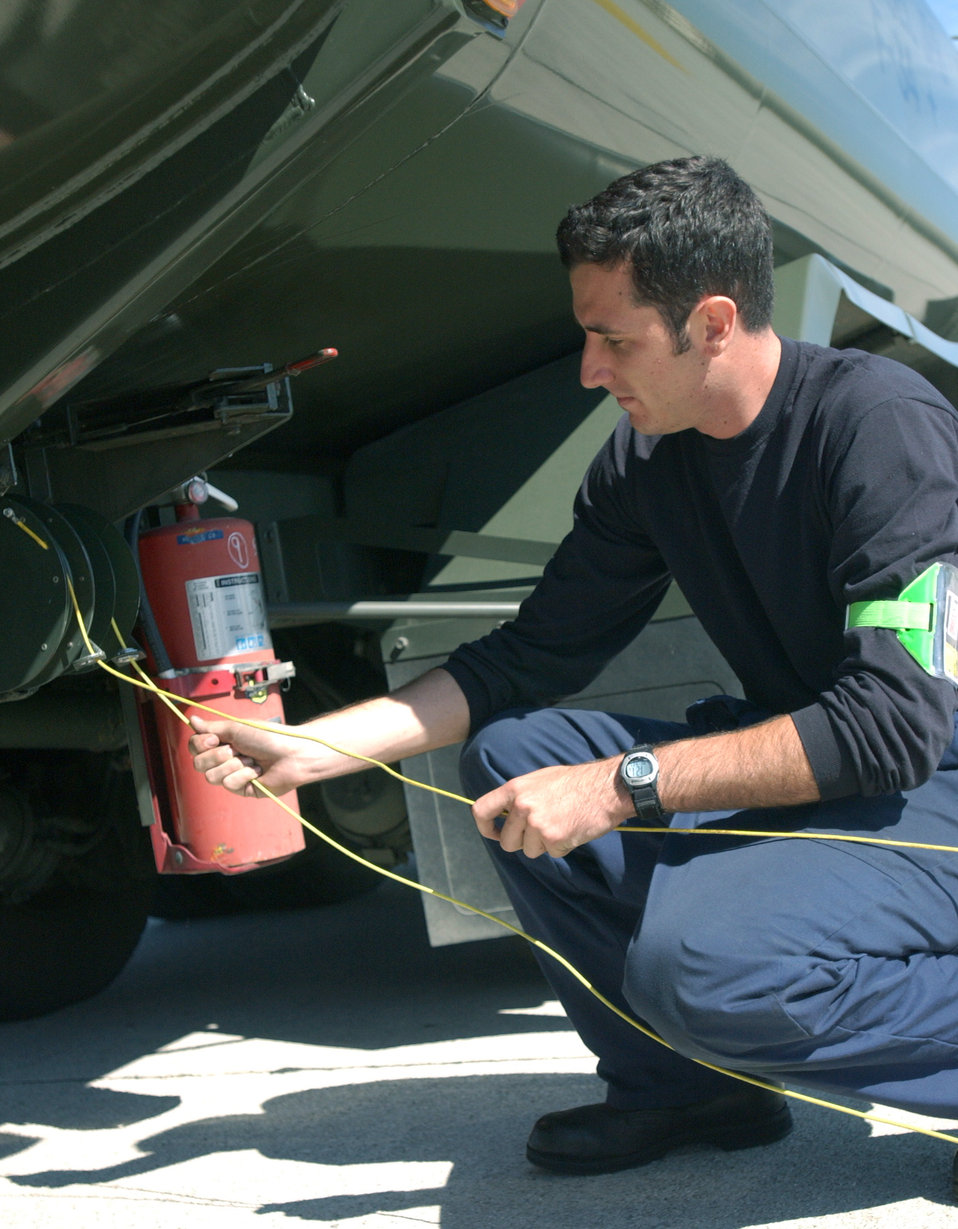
Golden Drum

AVIANO AIR BASE, Italy -- Airman 1st Class Joey Delatorre refuels an F-16 Fighting Falcon while competing for the Golden Drum award here Sept. 27. Airman Delatorre is a crew chief assigned to the 31st Aircraft Maintenance Squadron.